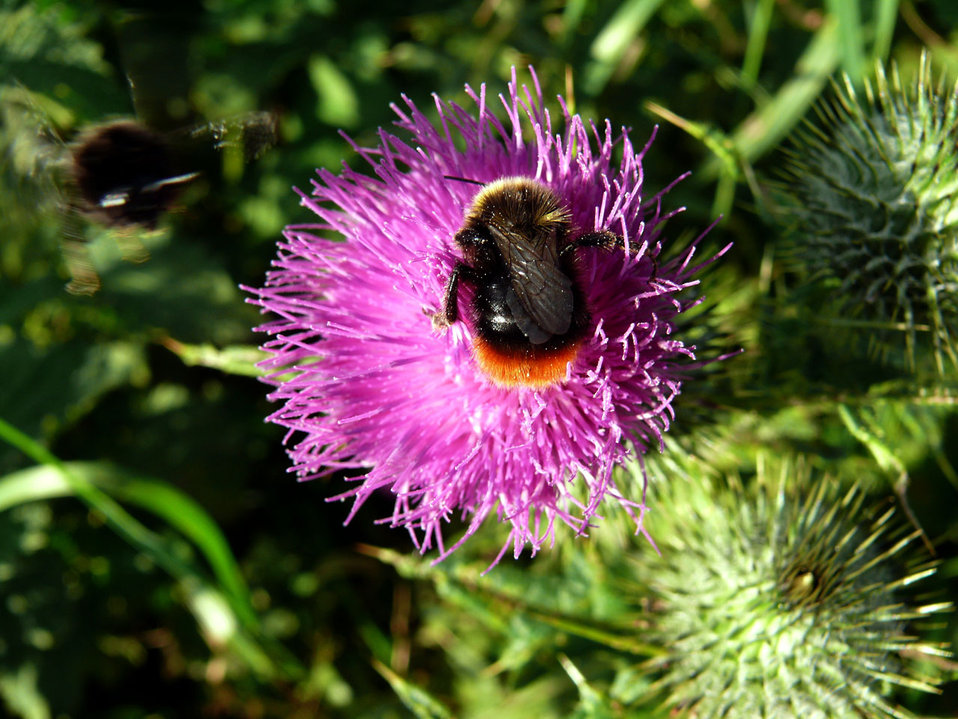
Bumblebee on flower.